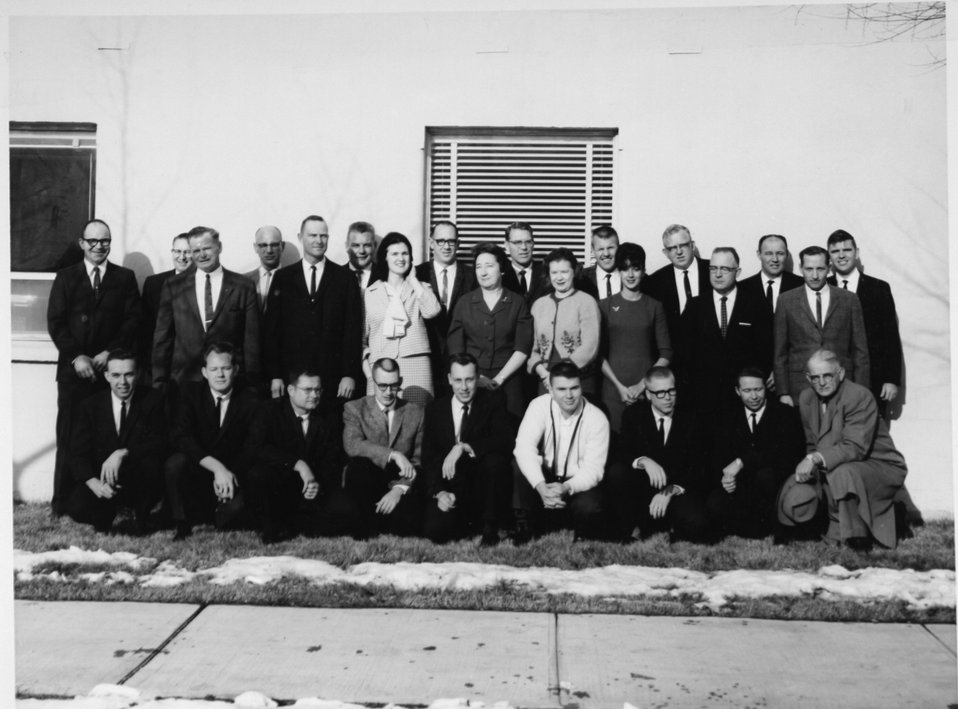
Burns District circa 1960. Names who had paid for a copy were on the back but not where in the photo. Dick Corbet, Laecy D., Slegelmilch, F.M.D., Willard Phillips (Kneeling 3rd from left), Reg Ross, Mildred, Donna Allen, R. Dierken, K. Knothe, Marvin Jeffers, Rober Michell, Kent Giles, Vern Stah, Dave Little, Henry Smith, Paul Gilison, Jack Senn, D. Cork, G. Webb, Rimard OKesan